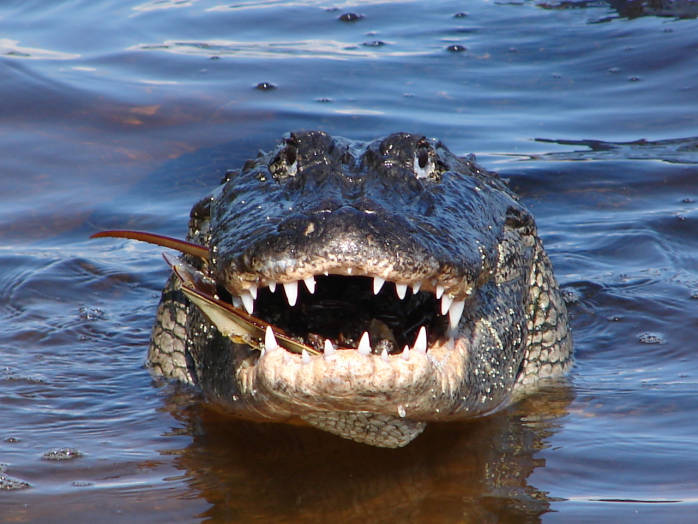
Smiling for the camera!